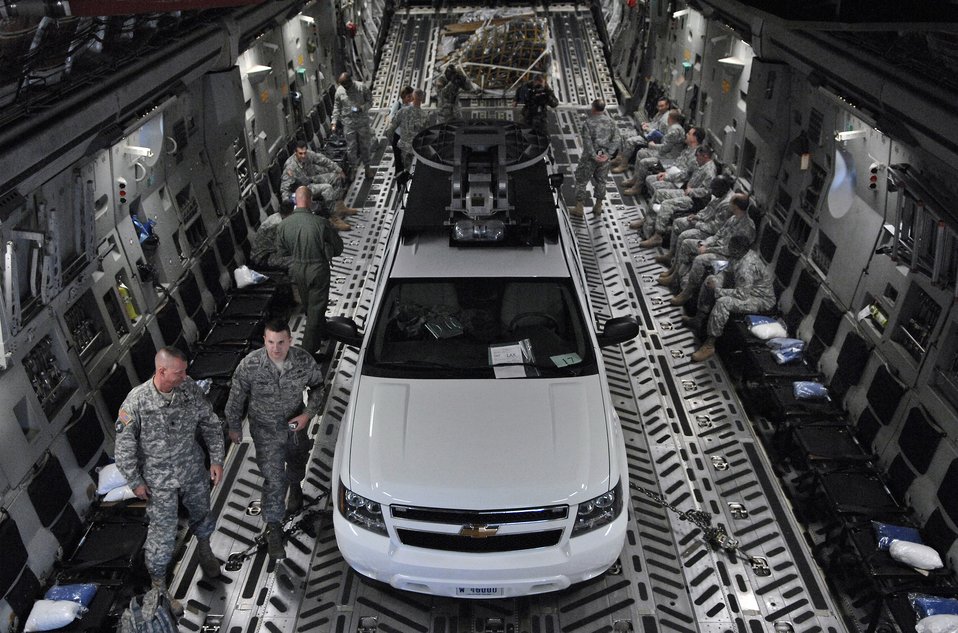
Globemaster delivers Army equipment to fight wildfires

Army Soldiers prepare for the flight to California as Airmen with the 97th Operations Support Squadron and the 58th Airlift Squadron make final preparations after loading an Army emergency response vehicle onto a C-17 Globemaster III Oct. 24 in San Antonio. The Soldiers and emergency response vehicle are being airlifted to California to help support personnel battling the wildfires. Members of the 97th OSS and the 58th AS, as well as the C-17 are from Altus Air Force Base, Okla. The Army Soldiers and equipment are from U.S. Army North based at Fort Sam Houston in San Antonio.